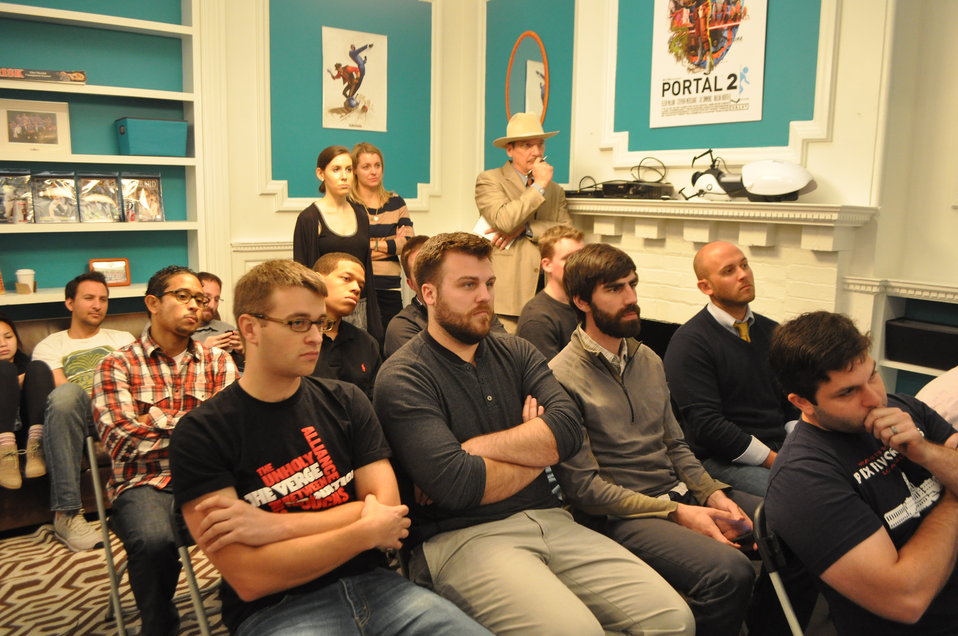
Broadband Challenges and Opportunities, at Vox Media